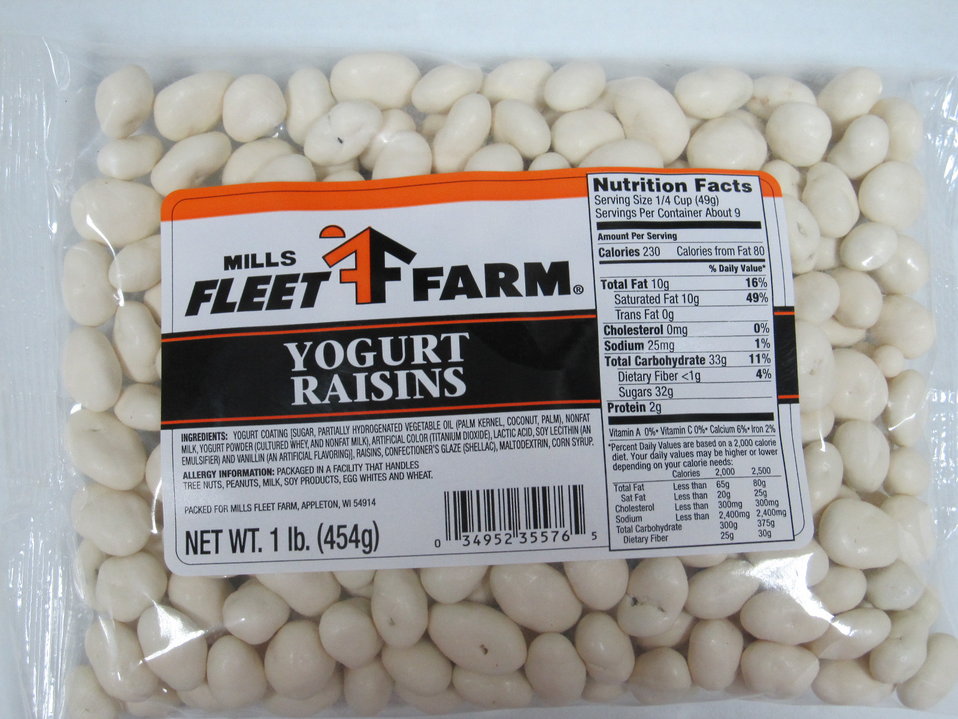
RECALLED - Yogurt Raisins and Granola Mix

December 22, 2011 - Eillien's Candies, Inc. Issues a Voluntary Recall of Select Candy Items Due to Possible Health Risk.